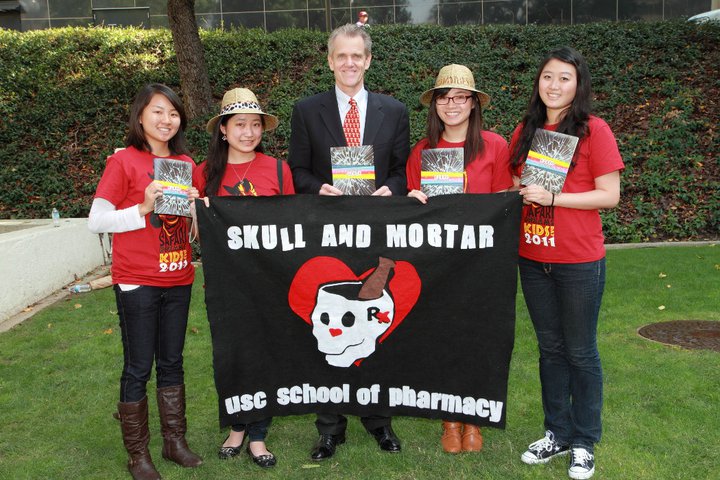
Kids Day 2011 - Substance Abuse

Kids Day at the USC School of Pharmacy. Around 120 kids from El Sereno Middle School participated this event.